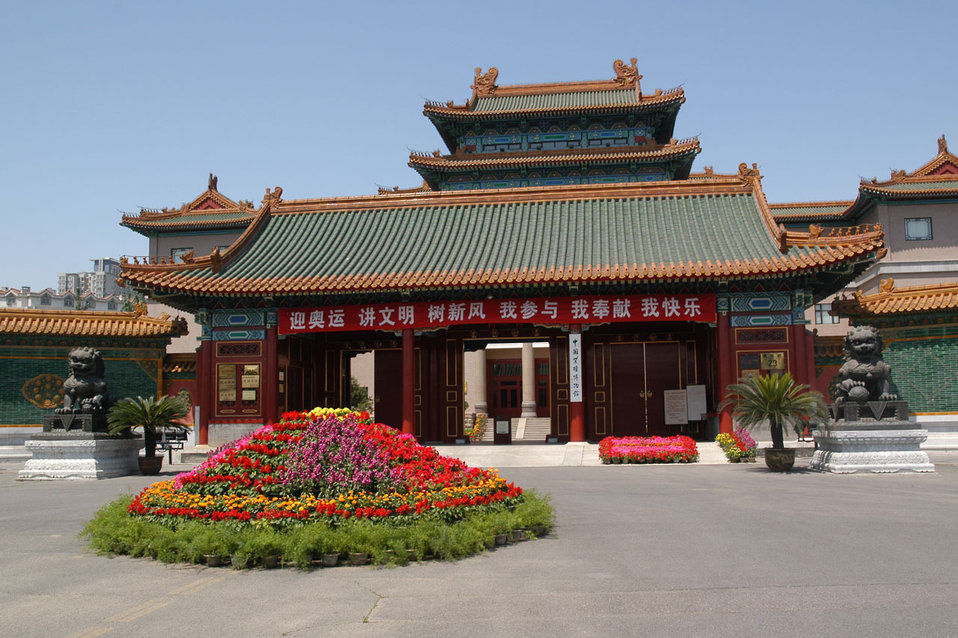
Classical chinese architecture

Chinese building in classical architectual style.